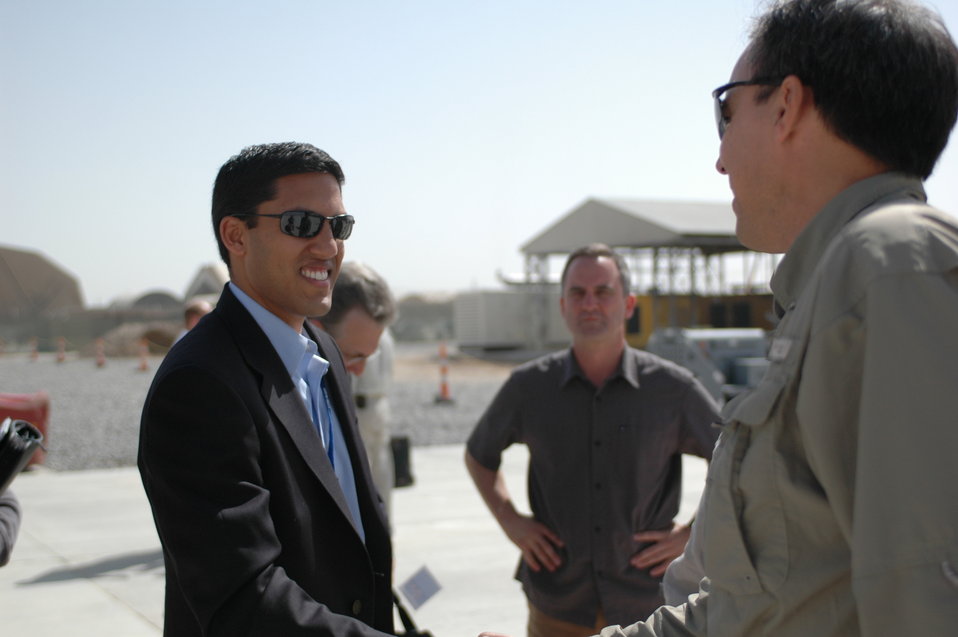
Dr Shah Visits Kandahar April 9, 2010